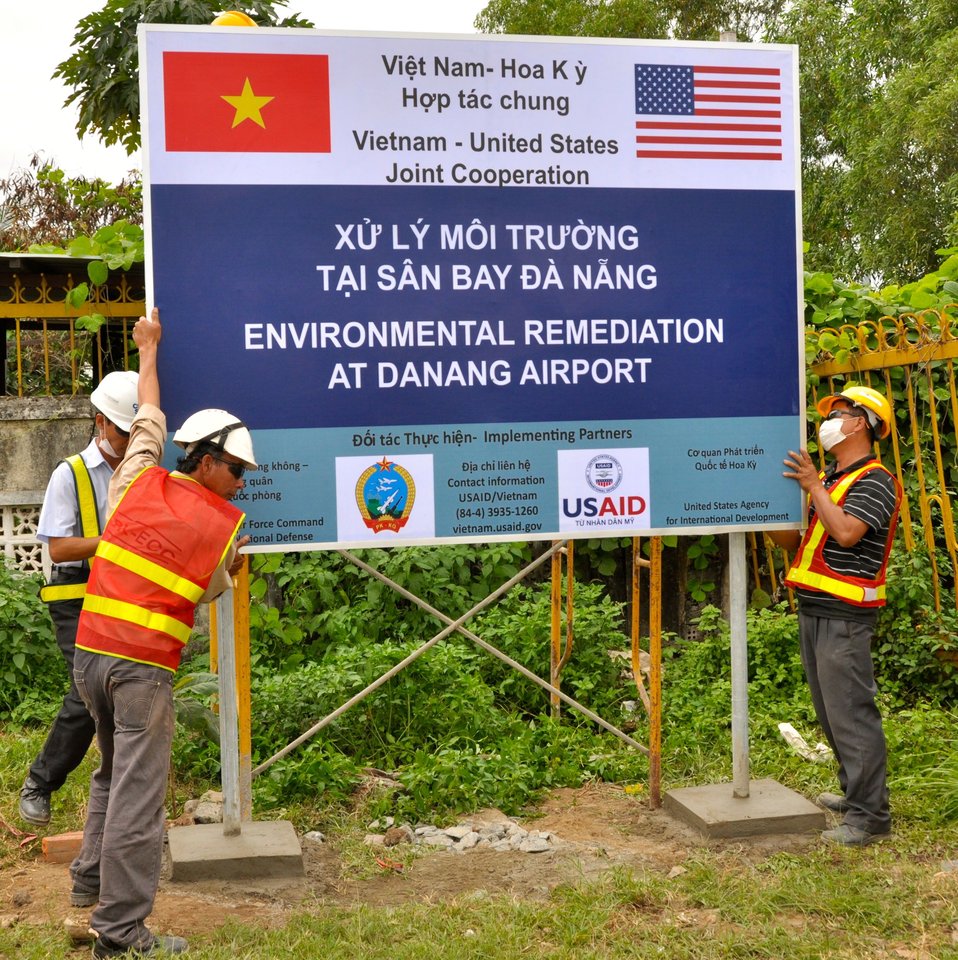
Site Preparation for Environmental Remediation of Dioxin Contamination at Danang Airport

Danang Airport, January 22, 2013